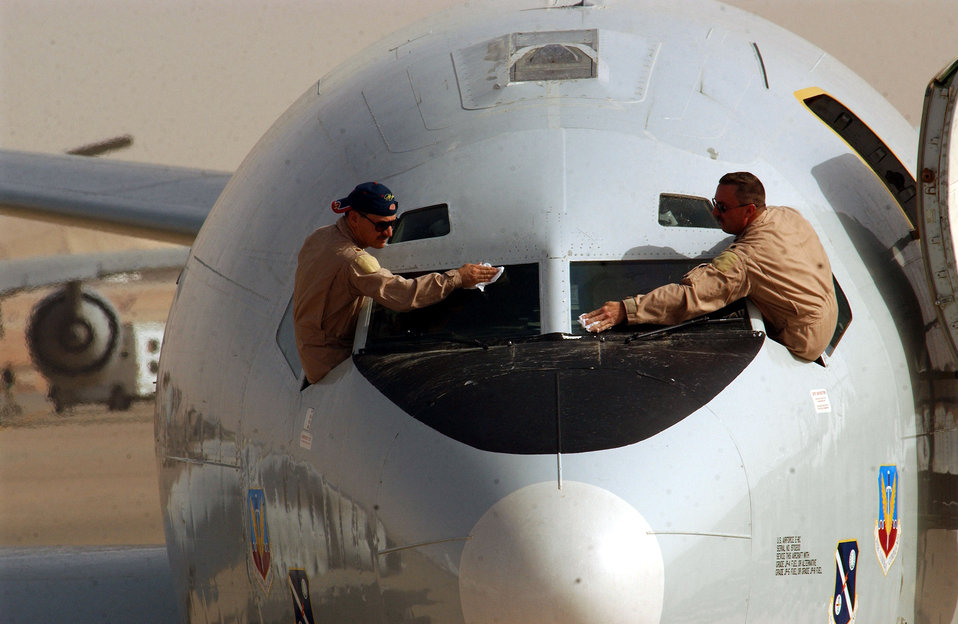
Clean machine

OPERATION IRAQI FREEDOM -- Maj. Robert Komlo and Lt. Col. Keith Turner, both E-8 Joint Surveillance Target Attack Radar System pilots deployed from the Georgia Air National Guard, clean their windshield before taking off for a mission April 21. JSTARS aircraft fly missions 24 hours a day in support of Operation Iraqi Freedom at a forward-deployed location in Southwest Asia.